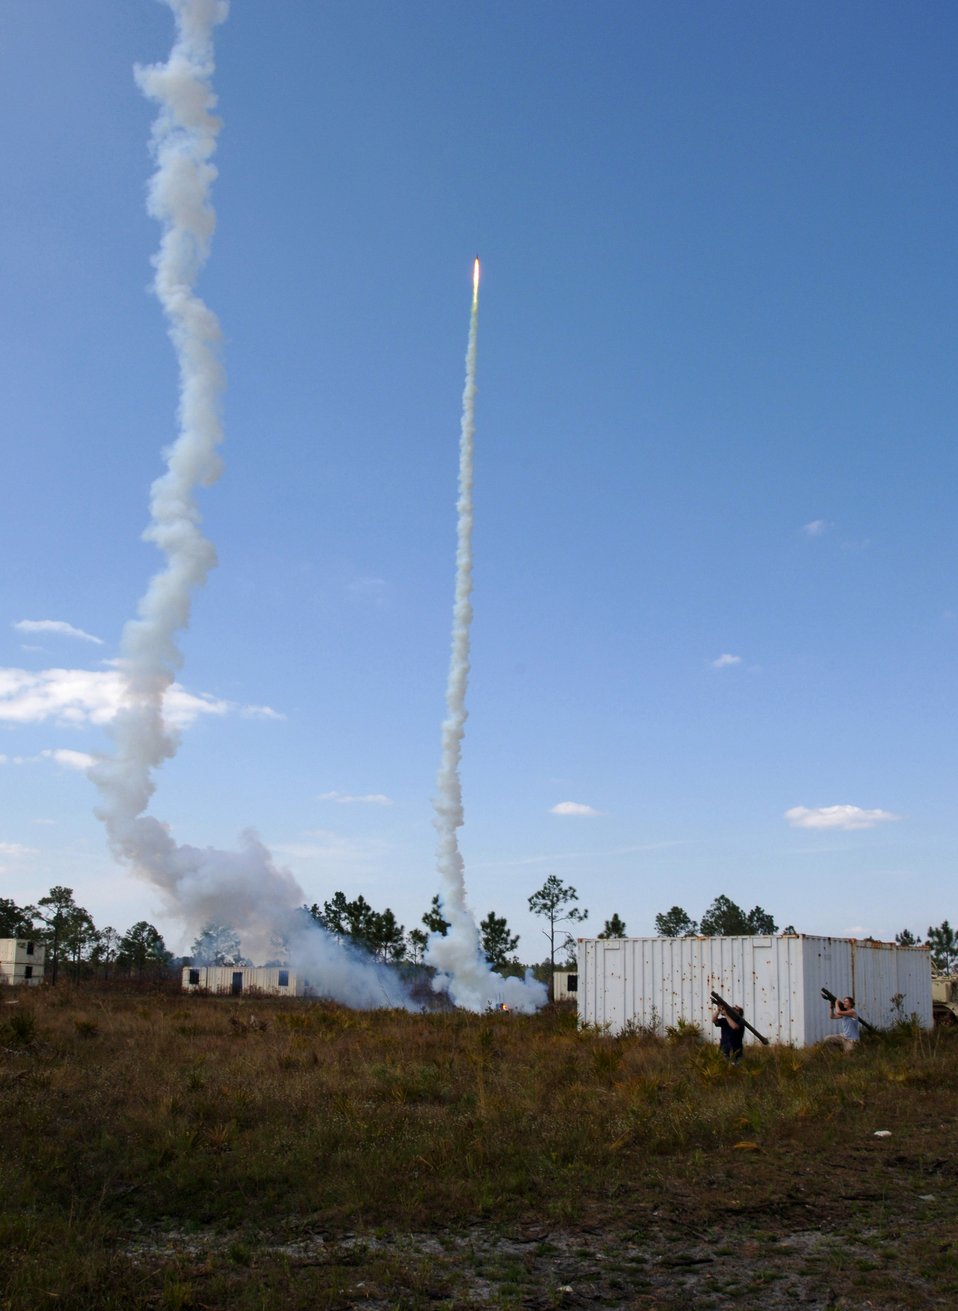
Atlantic Strike III

Two